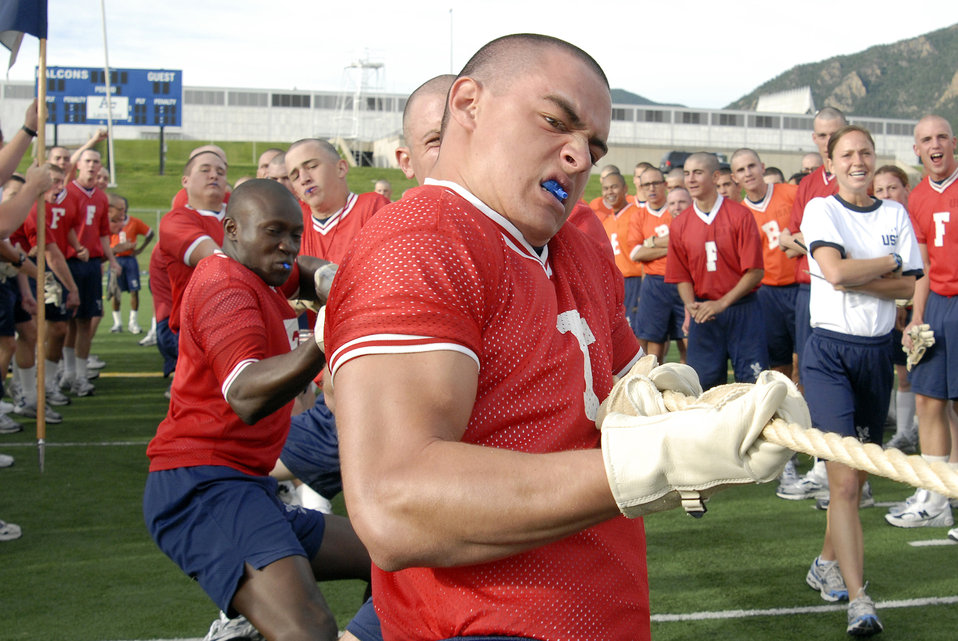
Class of 2013 Field Day

Basic cadet trainees with the U.S. Air Force Academy's Class of 2013 participate in the tug of war during Field Day activities here today. About 1,344 trainees competed in various athletic events during Field Day, including tug
of war, log relays, steeple chase and sprint relays. Basic cadet training started June 25 and continues through Aug. 1. The new cadets are in their first month of training and are learning about Air Force heritage, honor, discipline and Air Force core values, in addition to improving physical
fitness. The fall academic semester begins Aug. 6.